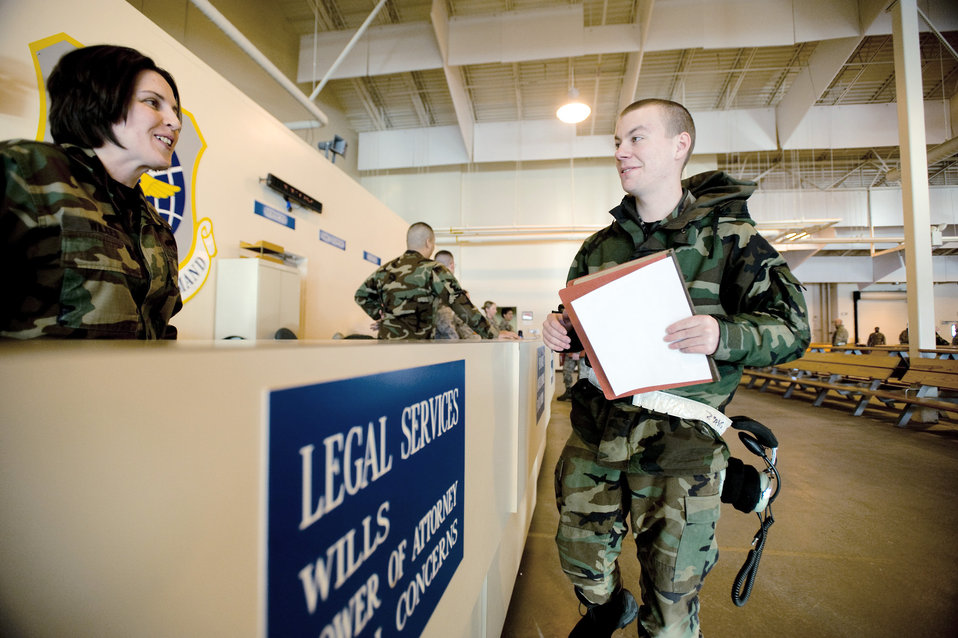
Elmendorf officials prepare for possible volcano eruption

Capt. Constance Wilkes offers legal services to Airman 1st Class David Morris in preperation for his deployment to McChord Air Force Base, Wash., Feb. 1 at Elmendorf AFB, Alaska. Five C-17 Globemaster IIIs and around 130 operations and maintenance personnel are heading to McChord AFB as a precautionary measure due to increased volcanic activity associated with nearby Mount Redoubt. Captain Wilkes is assigned to the 3rd Wing Legal Office, and Airman Morris is assigned to the 703rd Aircraft Maintenance Squadron.